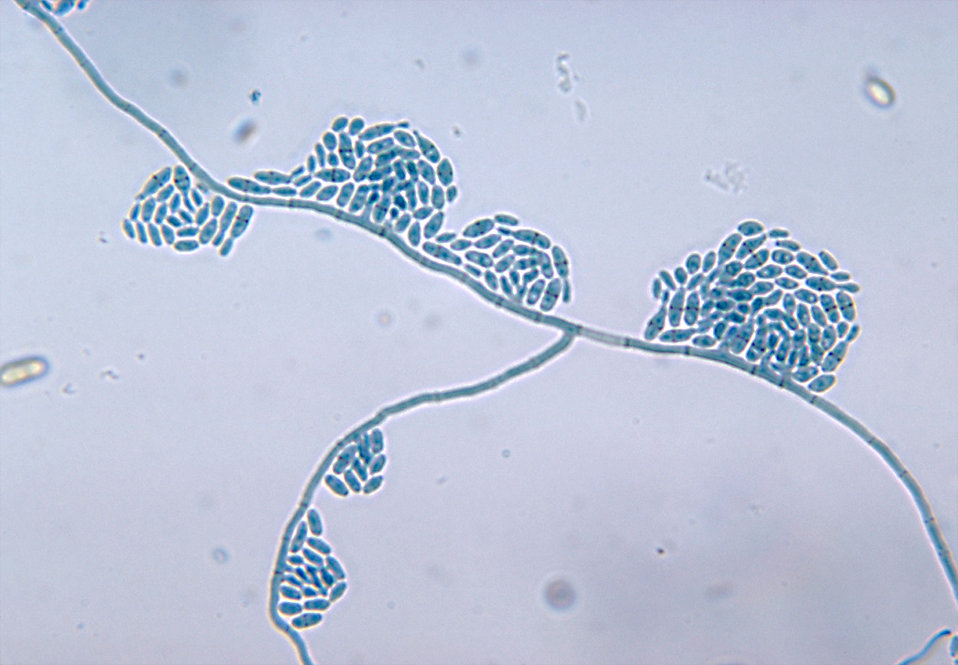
This micrograph reveals the mycelia and conidia of Hortaea werneckii, formerly Cladosporium werneckii.